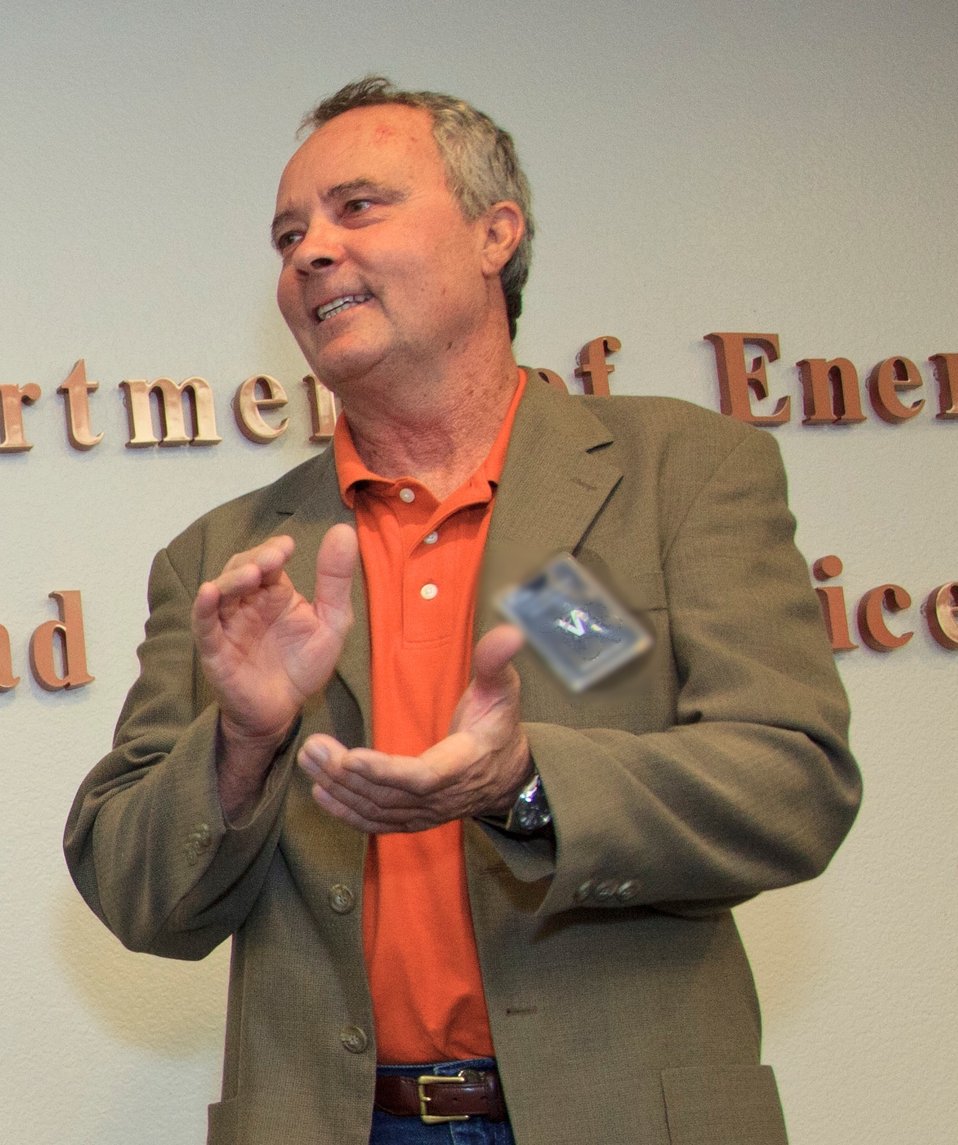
WIPP Recognition Event

On November 2, 2011 at a recognition event at the Waste Isolation Pilot Plant near Carlsbad, New Mexico, New Mexico Bureau of Mine Safety Associate State Mine Inspector Chris Hefner applauds after commending WIPP employees for their safety culture.